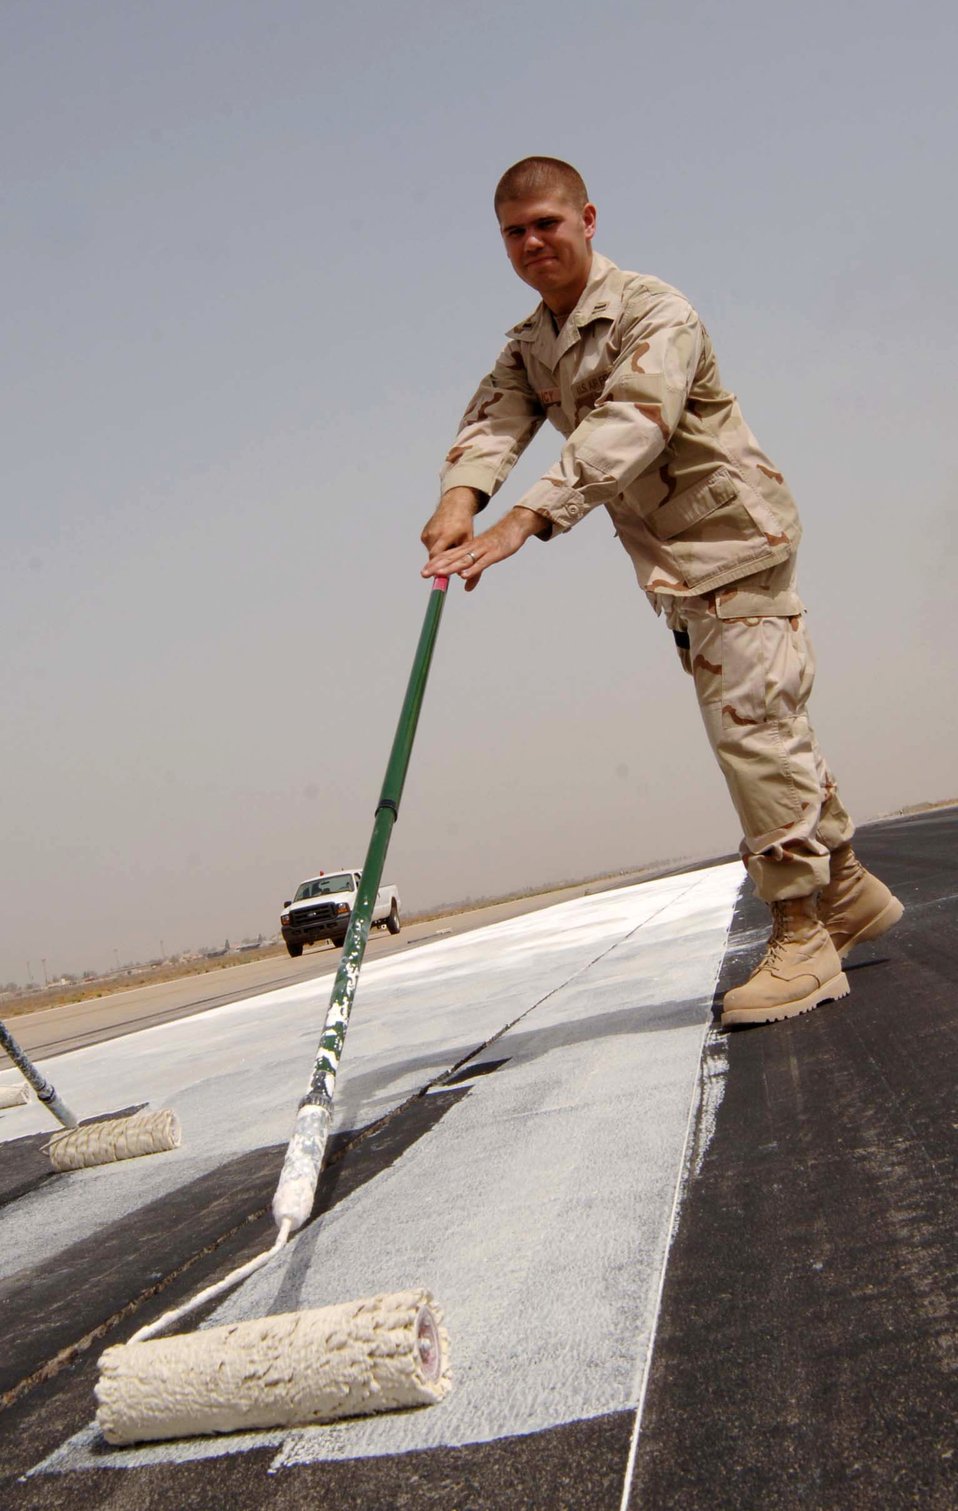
Drawing a line in the desert

1st Lt. Stephen Bucy paints a liquid lime mixture on the runway May 30 at Baghdad International Airport in Iraq. The lime acts as temporary markings for the shortening of the runway so repairs can be made. The runway was shortened by 3,000 feet. Lieutenant Bucy is assigned to the 447th Expeditionary Civil Engineer Squadron.